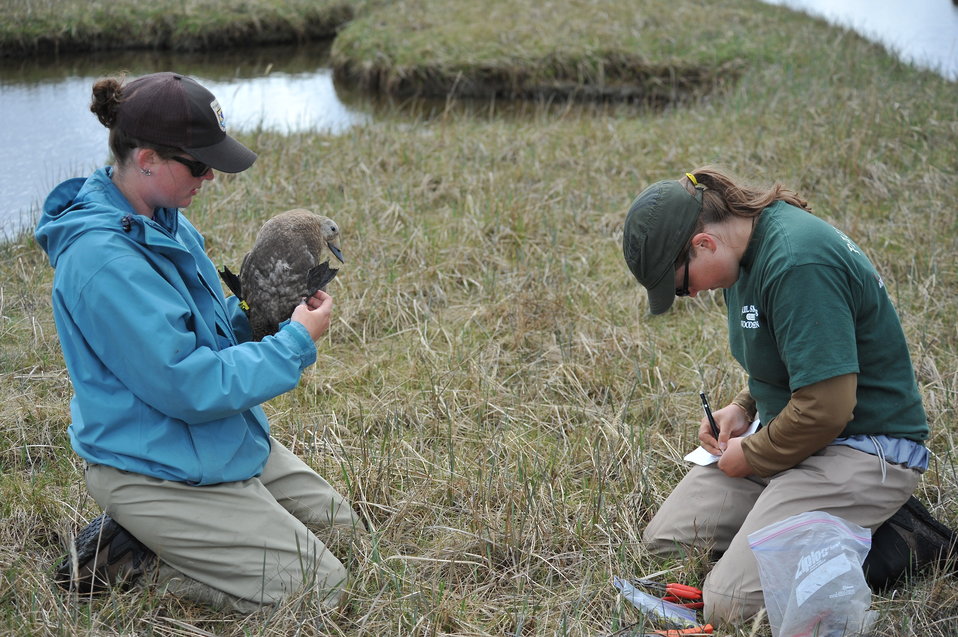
Recording Information

For survival analysis it is important not only to mark new females but also to resight previously marked birds. If birds can not be viewed via binoculars or scopes the females will be captured. Band numbers are recorded, culmen, and tarsal measurements are taken, and the female is also weighed.

USFWS Yukon Delta NWR